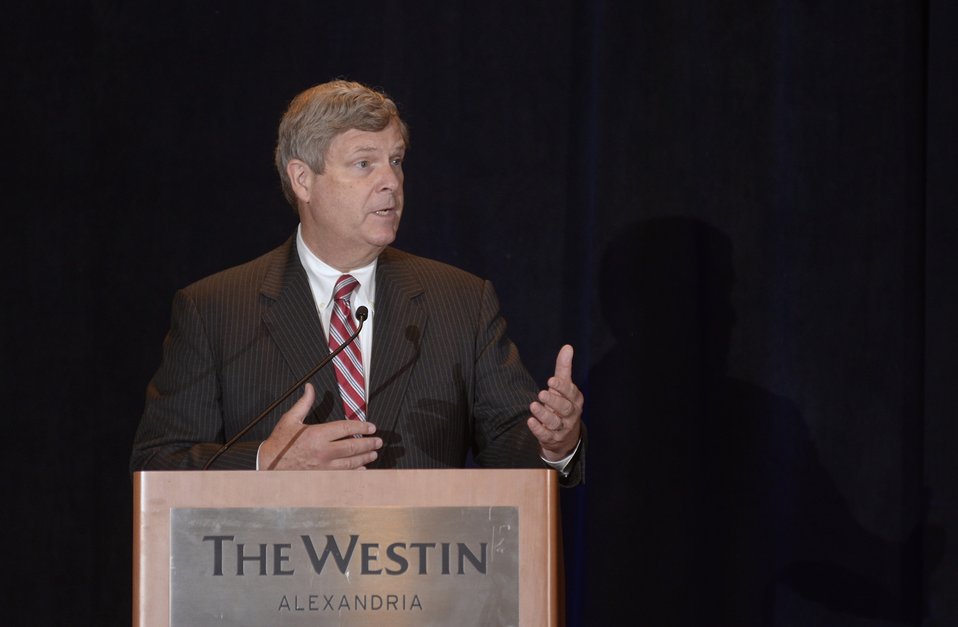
Agriculture Secretary Tom Vilsack presents keynote remarks at the U.S. Agricultural Export Development Council (USAEDC) Attaché Seminar, at the Westin Alexandria, in Alexandria, VA, on Wednesday, July 10, 2013. USAEDC is a non-profit private sector trade association that provides an exchange and coordination of information to promote the export of the products of U.S. agriculture. Their membership includes U.S. commodity trade associations, farmer cooperatives and state regional trade groups from around the country. In the interest of U.S. agricultural growers and producers their export promotion efforts, work in conjunction with the U.S. Department of Agriculture Foreign Agricultural Service.